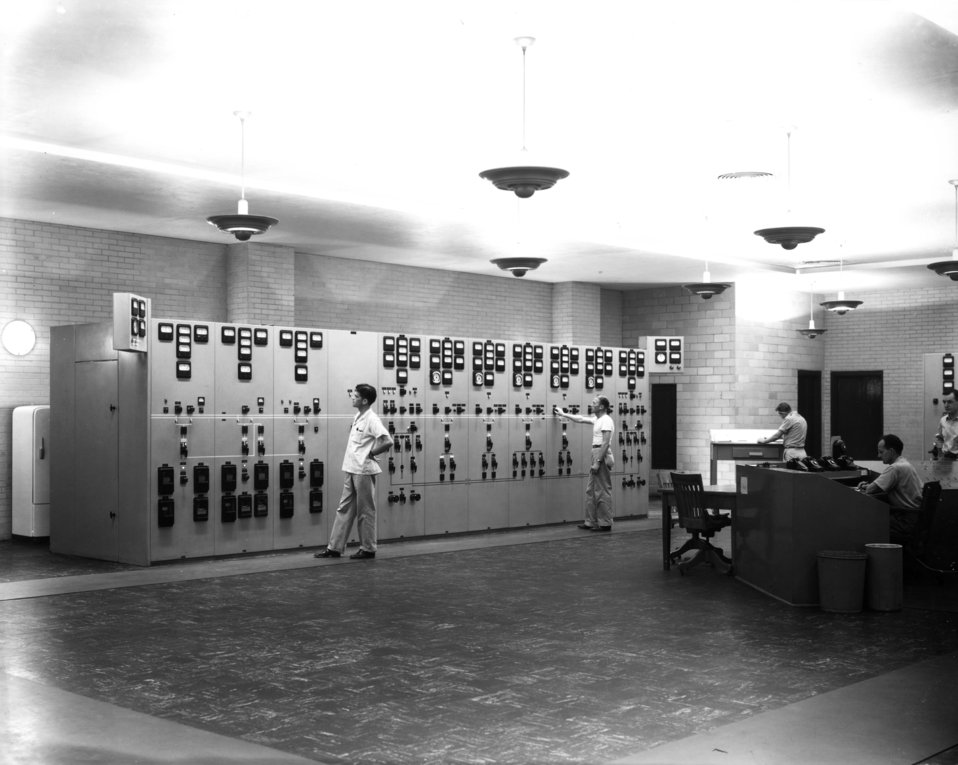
K-27 at Oak Ridge